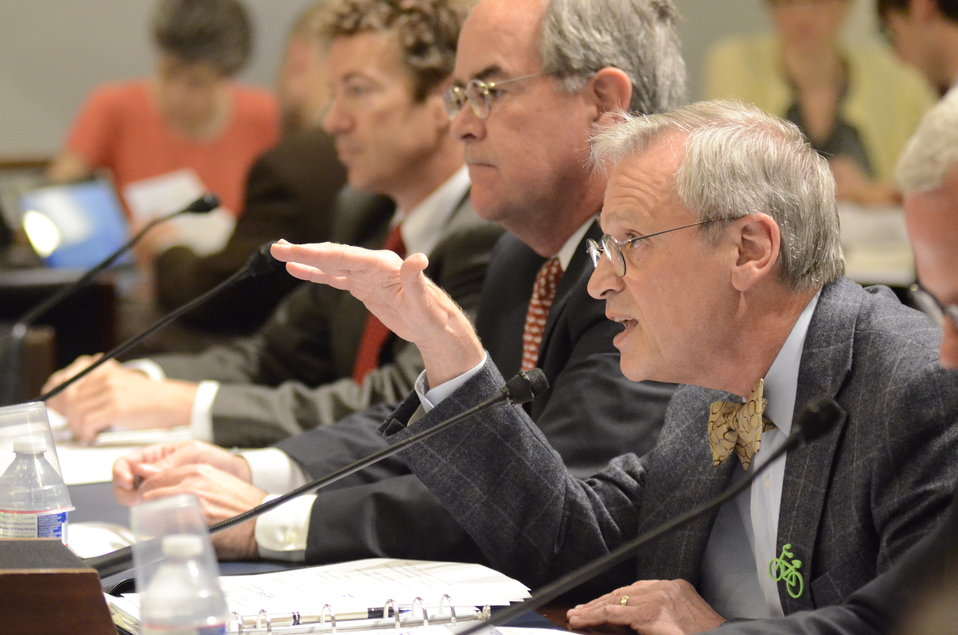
Congressman Earl Blumenauer (OR) testifies on Retailers & Entertainers Lacey Implementation & Enforcement Fairness Act & Freedom from Over-Criminalization & Unjust Seizures Act at the Longworth House Office Building in Washington, D.C. on Tuesday, May 8, 2012.